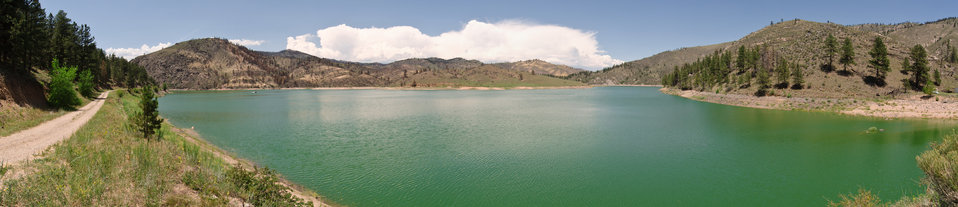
Panorama photo of Seaman Reservoir, drinking water resource for the City of Greeley, on Friday, July 20, 2012. The continuing aerial application of straw to mitigate soil and ash runoff from the mountainous terrain leading to this body of water. Helicopters operate from a landing zone at the foot of the reservoir spillway, where they lift and drop them onto barren, burned out tributary lands. Forest Service lands received straw, while private and other lands receive a seed mix and straw to promote ground cover plant growth on ash-covered lands. In total, 1,800 tons of straw will be applied during the 14-day operation. One quarter of the cost was paid by the City of Greeley and the U.S. Department of Agriculture funded the remainder. The Hewlett Gulch Fire was started by a camper who admitted using an alcohol-stove and accidentally started the fire on May 14. At its peak, more than 400 firefighters were battling fires being pushed by 50 mph winds that helped blacken over 12-square-miles of dry ground cover, brush and trees. Many of the trees were already dead and tinder dry from beetle-kill. The water in the reservoir remains clean and clear, while downstream water flow has gone from famous Colorado clear water to nearly black flows of water heavily laden with ash, silt, and burnt debris that recent thunderstorms have already washed down from the mountainsides.